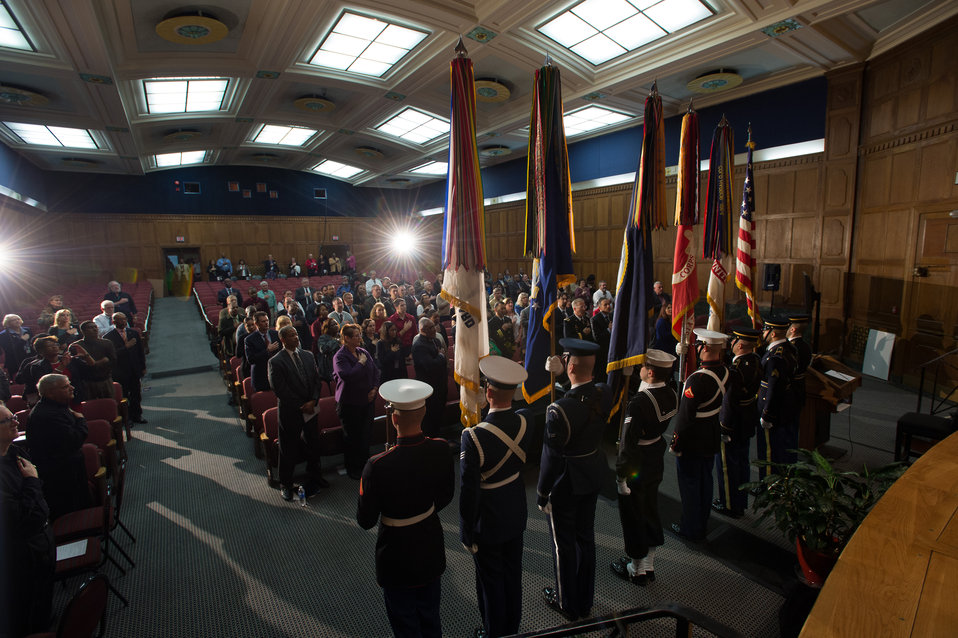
The U.S. Military District of Washington Joint Armed Forces Color Guard present the Colors, during the 2013 U.S. Department of Agriculture (USDA) Veterans’ Day Observance, whose theme is “VALOR, COURAGE, SACRIFICE – HONORING ALL WHO SERVED,” in Washington, DC, on Wednesday, November 20, 2013.